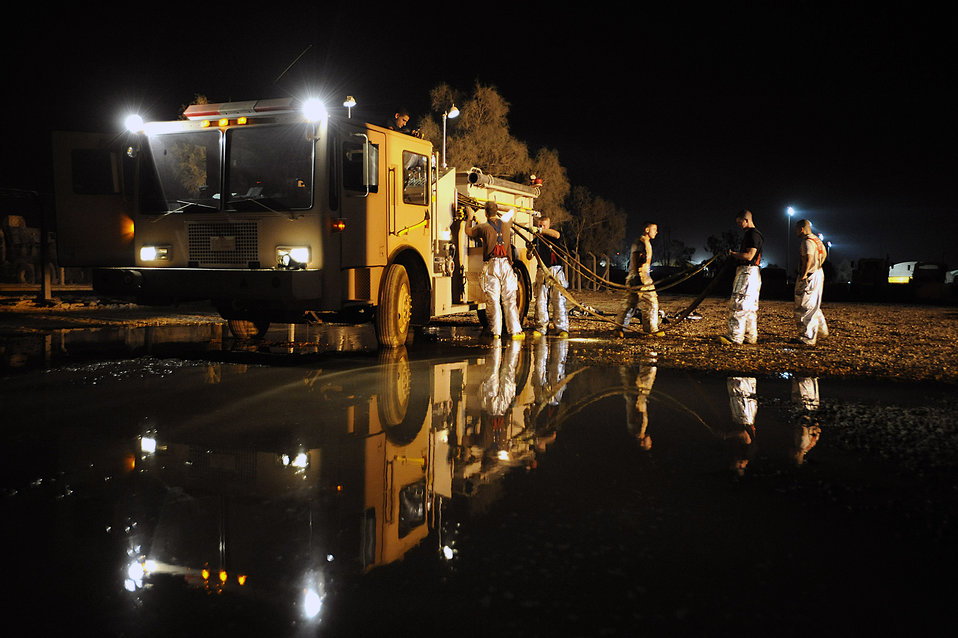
All in a day's work

Firefighters load hoses onto a fire engine Oct. 22 at Joint Base Balad, Iraq. These Airmen and Soldiers conducted a controlled burn as part of a live-fire training scenario, giving individual firefighters experience with extinguishing interior fires.